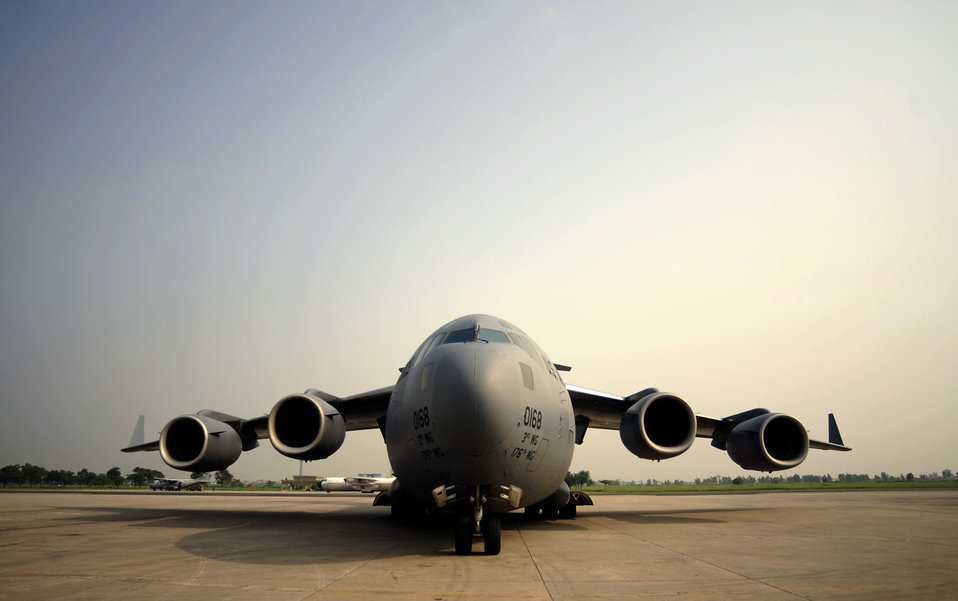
Help has arrived

A C-17 Globemaster III aircraft assigned to the 517th Airlift Squadron at Elmendorf Air Force Base, Alaska, arrives at Chaklala Air Force Base, Pakistan, Sept. 1, 2010, in support of flood relief efforts. The aircraft was carrying two UH-60 Black Hawk helicopters along with personnel for relief efforts.